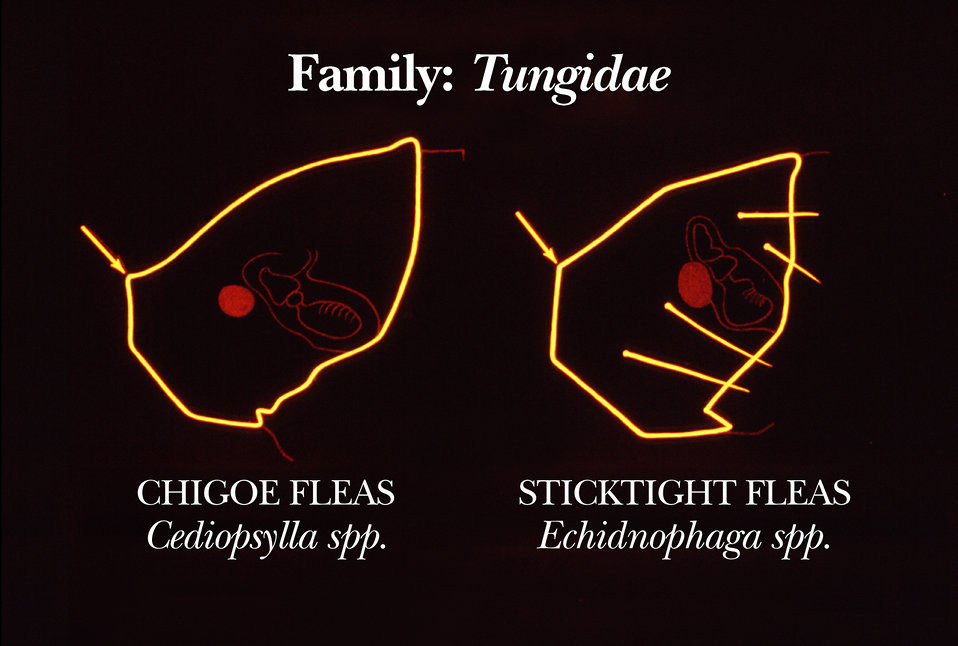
This drawing shows some of the identifying head region characteristics of certain fleas in the family Tungidae.